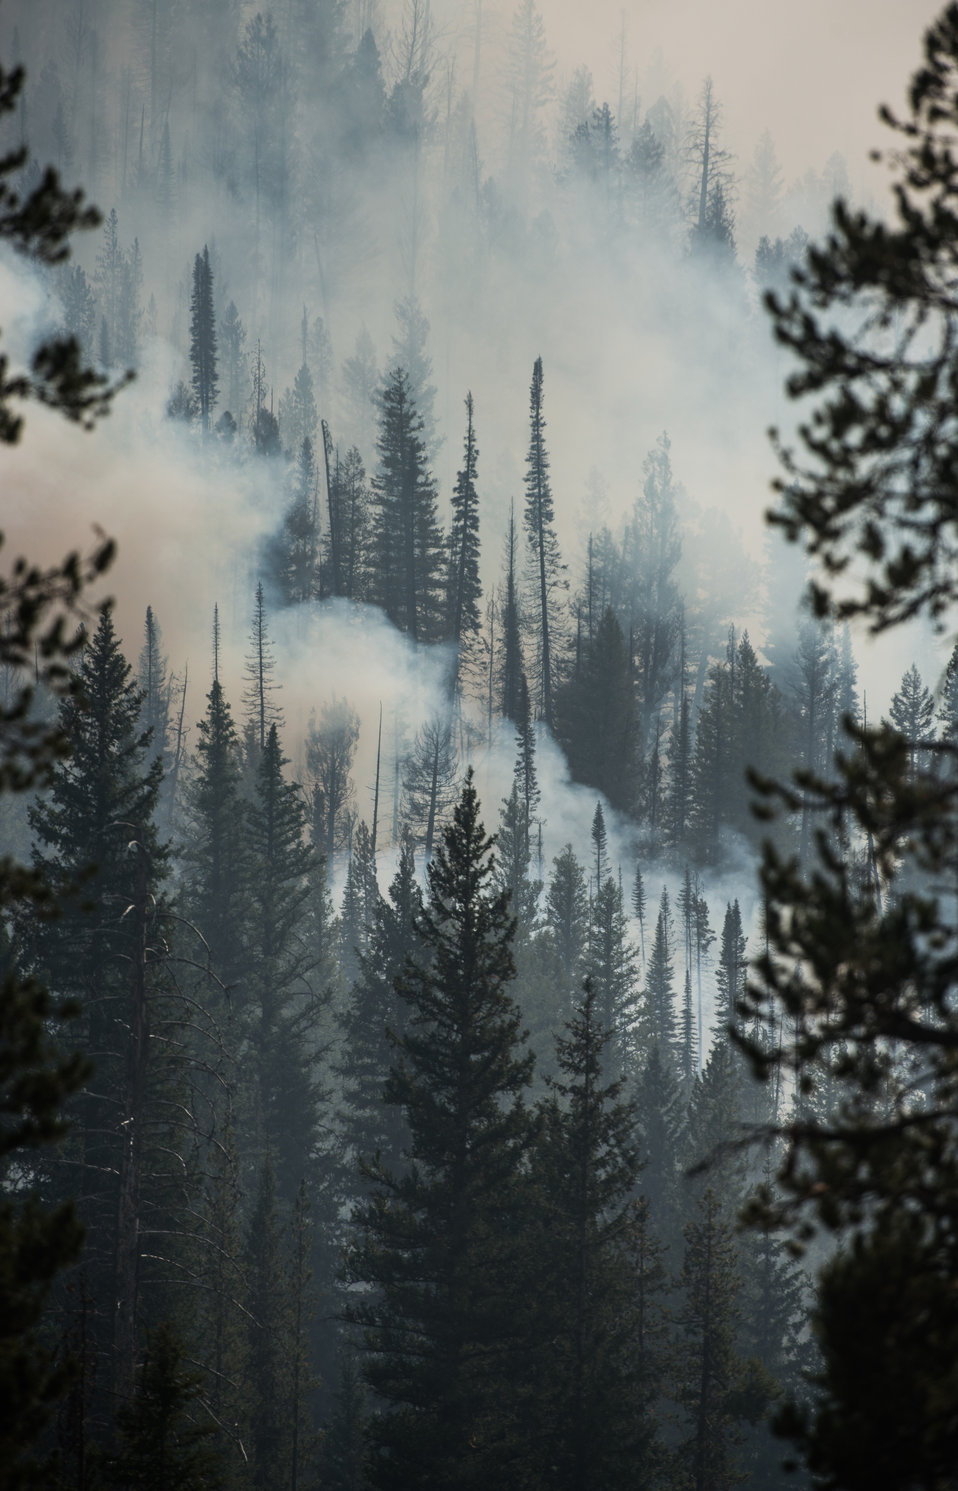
Structure protection, burnout of roads and natural barriers will help slow the progression of the main fire in the East Fork of Baker Creek, in the Sawtooth National Forest, during the Beaver Creek Fire, northwest of Hailey, ID, on Tuesday, Aug 20, 2013. Many homes are nestled in thick groves of trees. Feller and skidders are used to thin the density of trees close to homes.